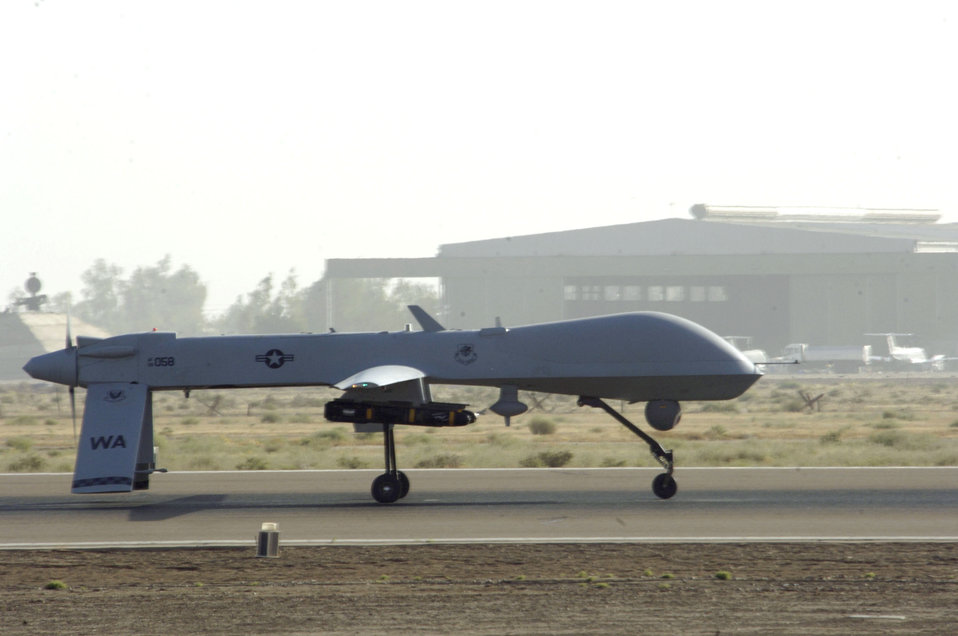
Unmanned engagement

An MQ-1 Predator unmanned aerial vehicle taxis down the runway at Balad Air Base, Iraq, on Wednesday, June 14. The Predator can employ two laser-guided Hellfire anti-tank missiles.